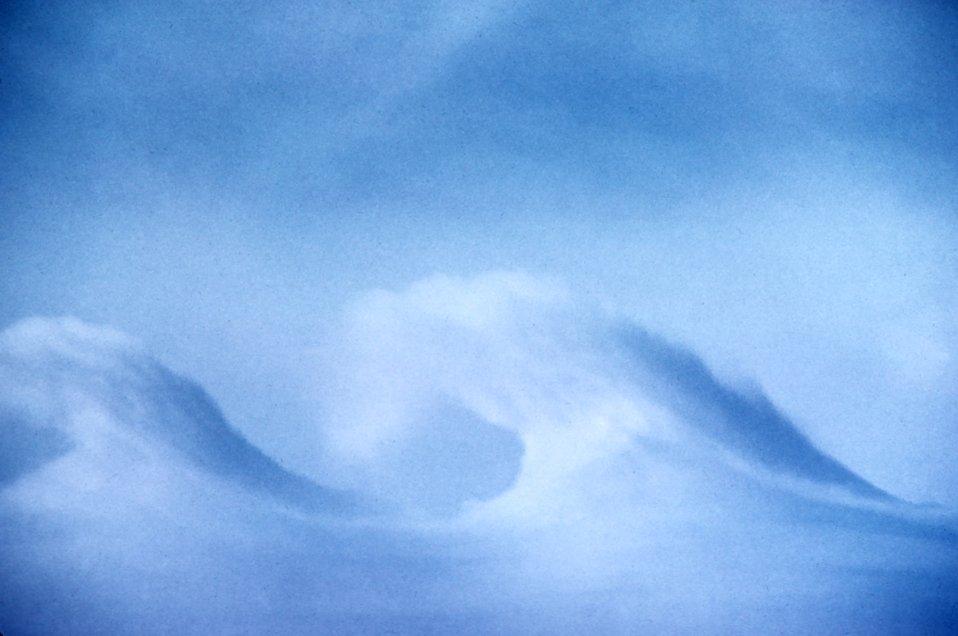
Helmholtz wave clouds over the Front Range of the Rocky Mountains.